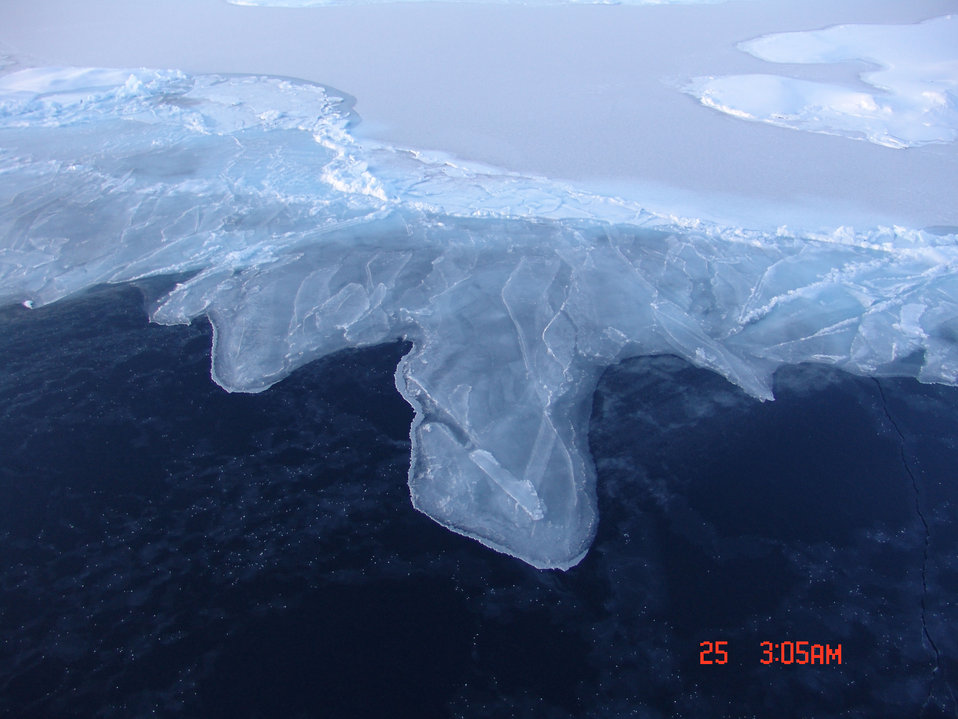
Rafting nilas forming grey-white ice as it continues to grow in thickness. The dark ice to the bottom is thin nilas with frost flowers showing as white specks.